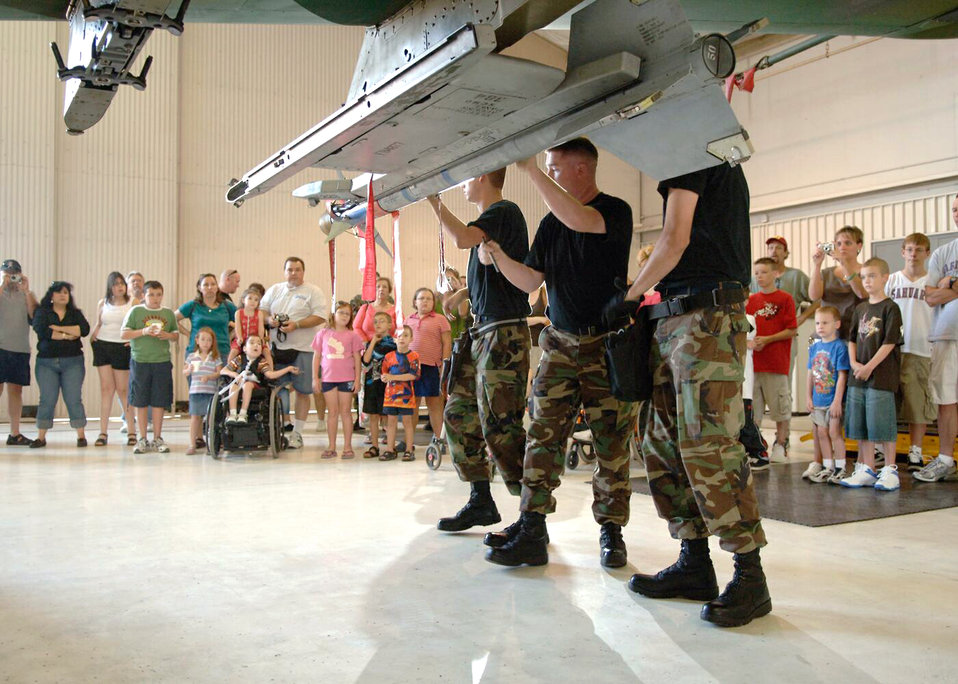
Make-A-Wish

A crew team with the 355th Maintenance Group loads weapons on to an A-10 Thunderbolt II during a demonstration July 17 at Davis-Monthan Air Force Base, Ariz. The Make-A-Wish Foundation teamed with Davis-Monthan to offer a tour of the base for Make-A-Wish children and their families. The tour also consisted of demonstrations by an explosive ordnance disposal robot, base fire department and the weapons load team.